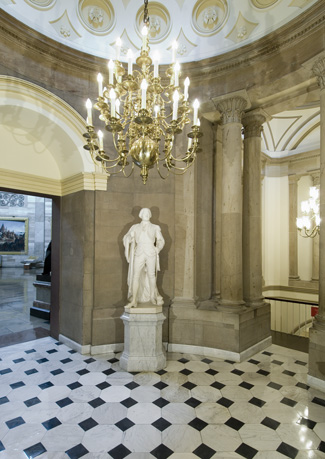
Small House Rotunda

The Small House Rotunda is one of the most architecturally significant spaces in the U.S. Capitol. It was designed in 1804 by architect Benjamin Henry Latrobe during his first building campaign after he was appointed by Thomas Jefferson to construct the south wing of the Capitol.